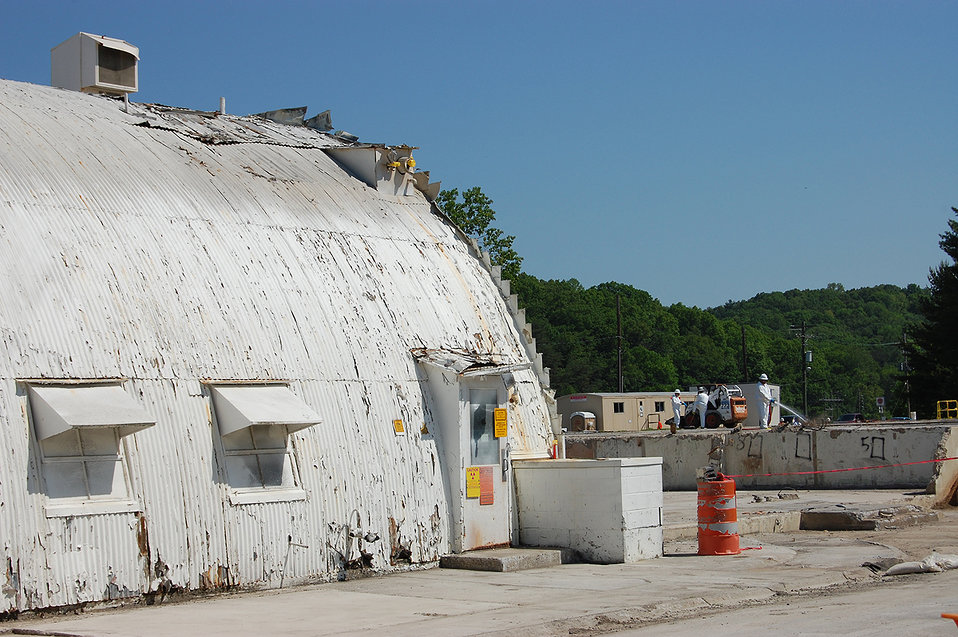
Decommissioning and demolition at Oak Ride

The Recovery-accelerated removal of the 2000 Complex buildings will make way for the expansion of the Oak Ridge Science & Technology Park.